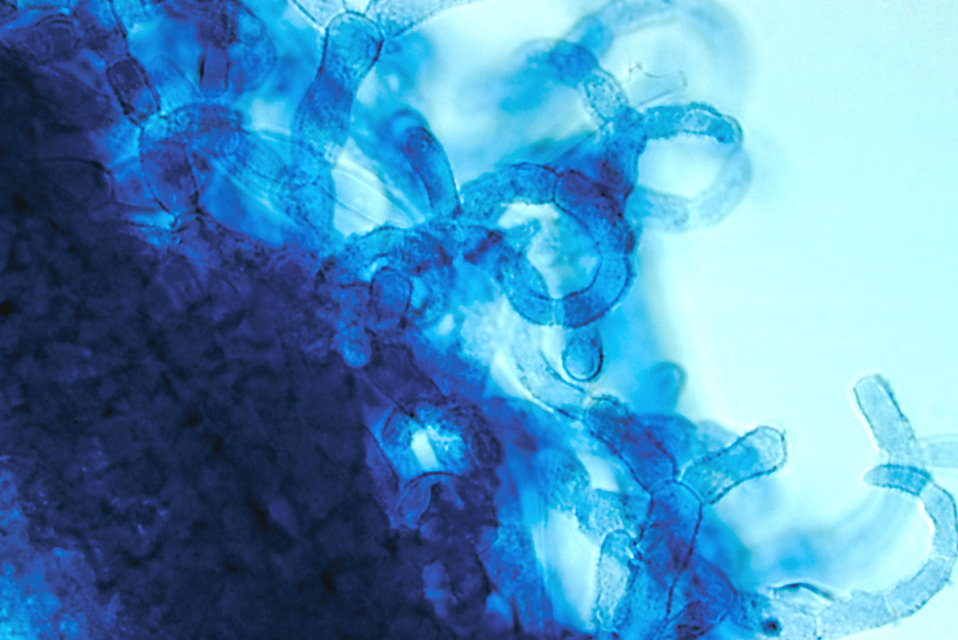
This image shows the cleistothecium of the fungus Arthroderma grubyi, formerly known as Nannizzia grubyia.